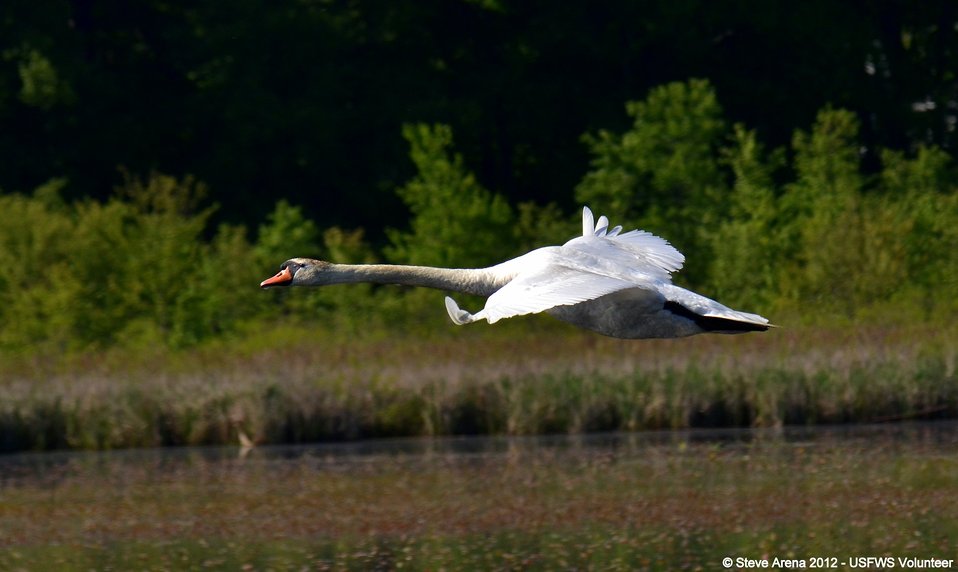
Mute Swan (Cygnus olor) Great Meadows NWR, Concord, MA

Mute Swan Great Meadows NWR, Concord, MA

Credit: Steve Arena/USFWS

18 May 2012